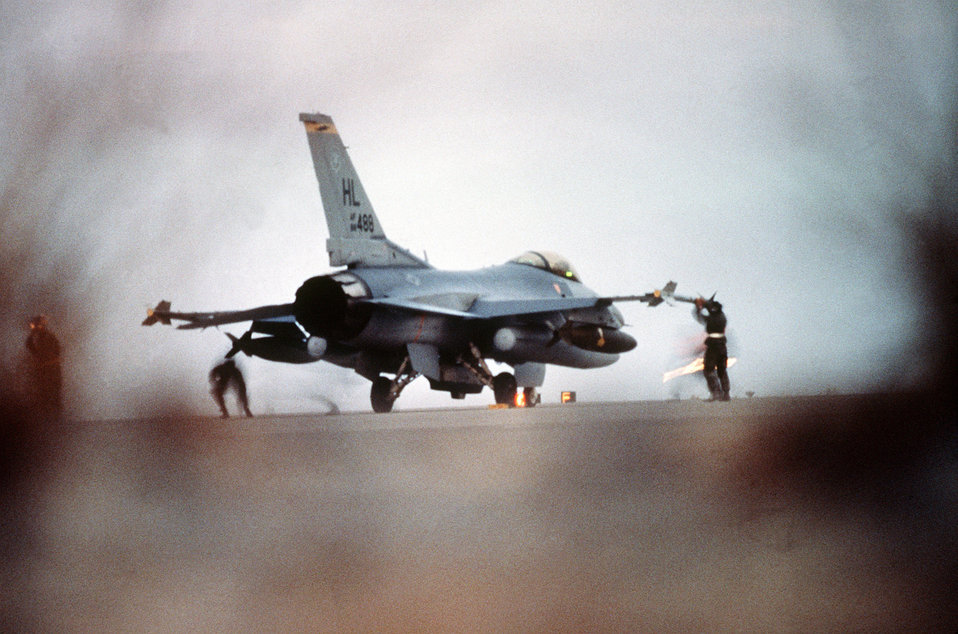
F-16C Fighting Falcon

1990's -- An F-16C Fighting Falcon fighter aircraft from the 388th Tactical Fighter Wing, Hill Air Force Base, Utah, is prepared for a strike against targets in Iraq and Kuwait during Operation Desert Storm.